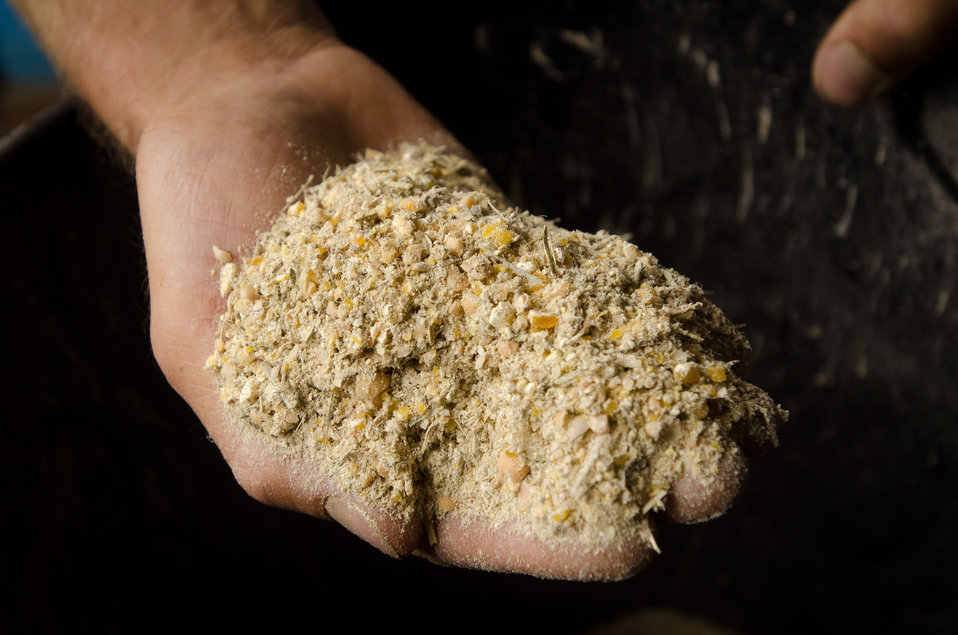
Organic feeds supplement the diet of layer and broiler chickens at Nick’s Organic Farm, in Adamstown, MD, on Friday, July 12, 2013. The farm, owned by Nick Maravell, produces Black Angus beef, chicken, turkey, eggs, hay, soybeans, corn, alfalfa, orchard grass, rye; and other crops. The cattle are100% grass-fed receiving certified organic pasture, certified organic hay (in winter), water and mineral salts mixed with sea kelp. The cattle are not fed hormones, antibiotics or animal products. Poultry feed from grain is ground from organic grain. The poultry also graze on organic pastures. The farm has conducted on-farm research with federal, state and non-profit agencies to refine organic practices. An organization such as the U.S. Department of Agriculture (USDA) Agricultural Research Service (ARS) center in Beltsville has been able to conduct research to improve organic crops and to breed and manage the cattle so that they have.